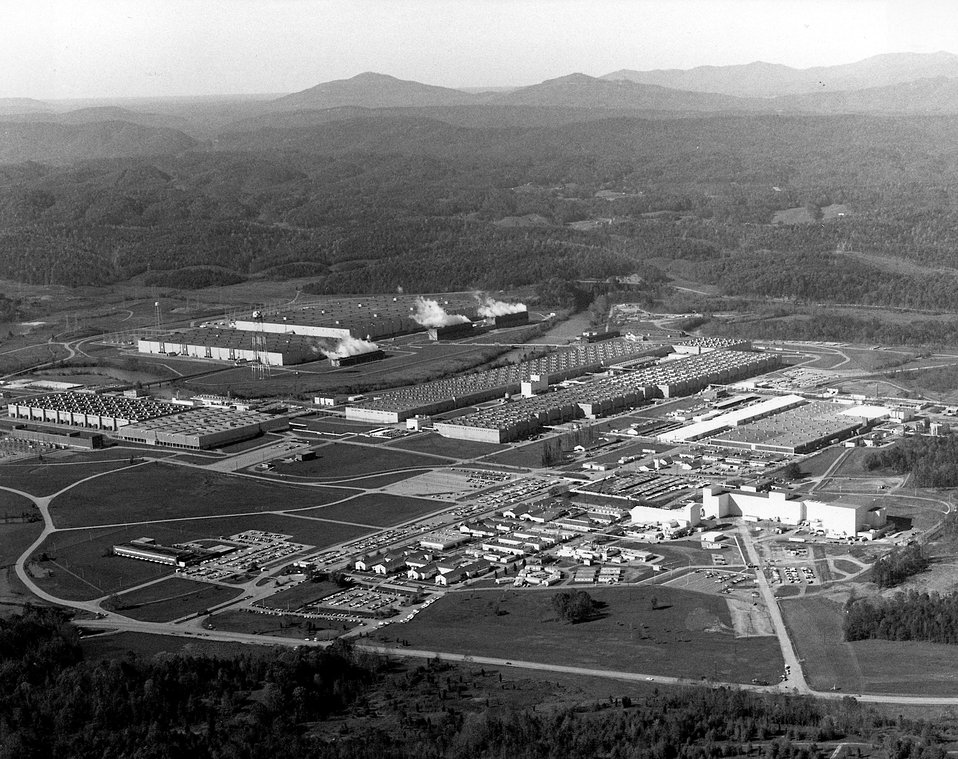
The Energy Research and Development Administration's Oak Ridge (Tenn.) Gaseous Diffusion Plant is the first such facility built in the world for production of enriched uranium. The original gaseous diffusion process building 'K-25,' which is the U-shaped building, was constructed in 1943 and began operating in 1945, producing enriched uranium for the Manhattan Project of World War II. Circa 1976.